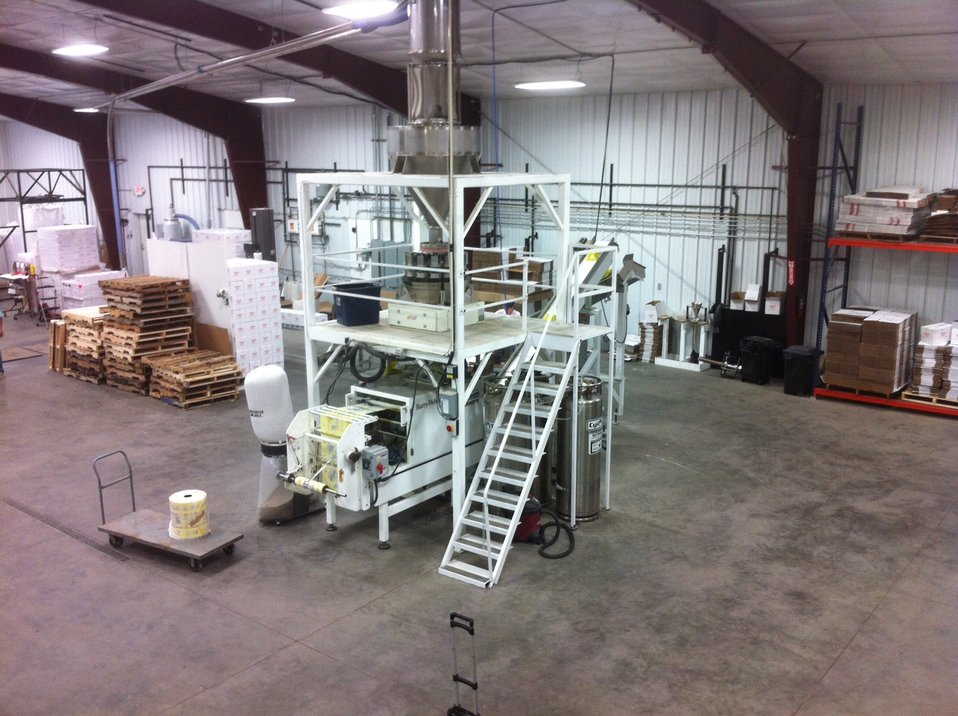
Dakota Style-eastriverelectric

New equipment sits inside the Dakota Style facility in Clark, SD on June 19, 2012. Dakota Style started making their own potato chips 25 years ago and has expanded into sunflower seeds and salad toppers. When progress led to a large national contract, they needed space for packaging equipment and storage for shipment. Dakota Style received a loan through the U.S. Department of Agriculture (USDA) Rural Development (RD) Intermediary Relending Program (IRP), which assisted the business with financing for the equipment to package the sunflower seeds.